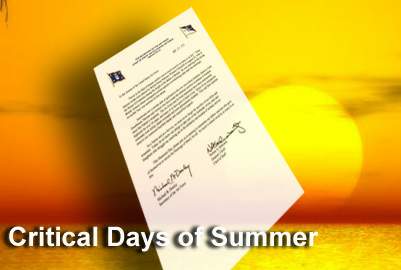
Leaders sent letter to Airmen on Critical Days of Summer

The secretary of the Air Force and the Air Force chief of staff cited the start of the 2009 Critical Days of Summer campaign, and called for everyone to be proactive in saving lives during this high-risk season in a letter to Airmen sent out May 22.